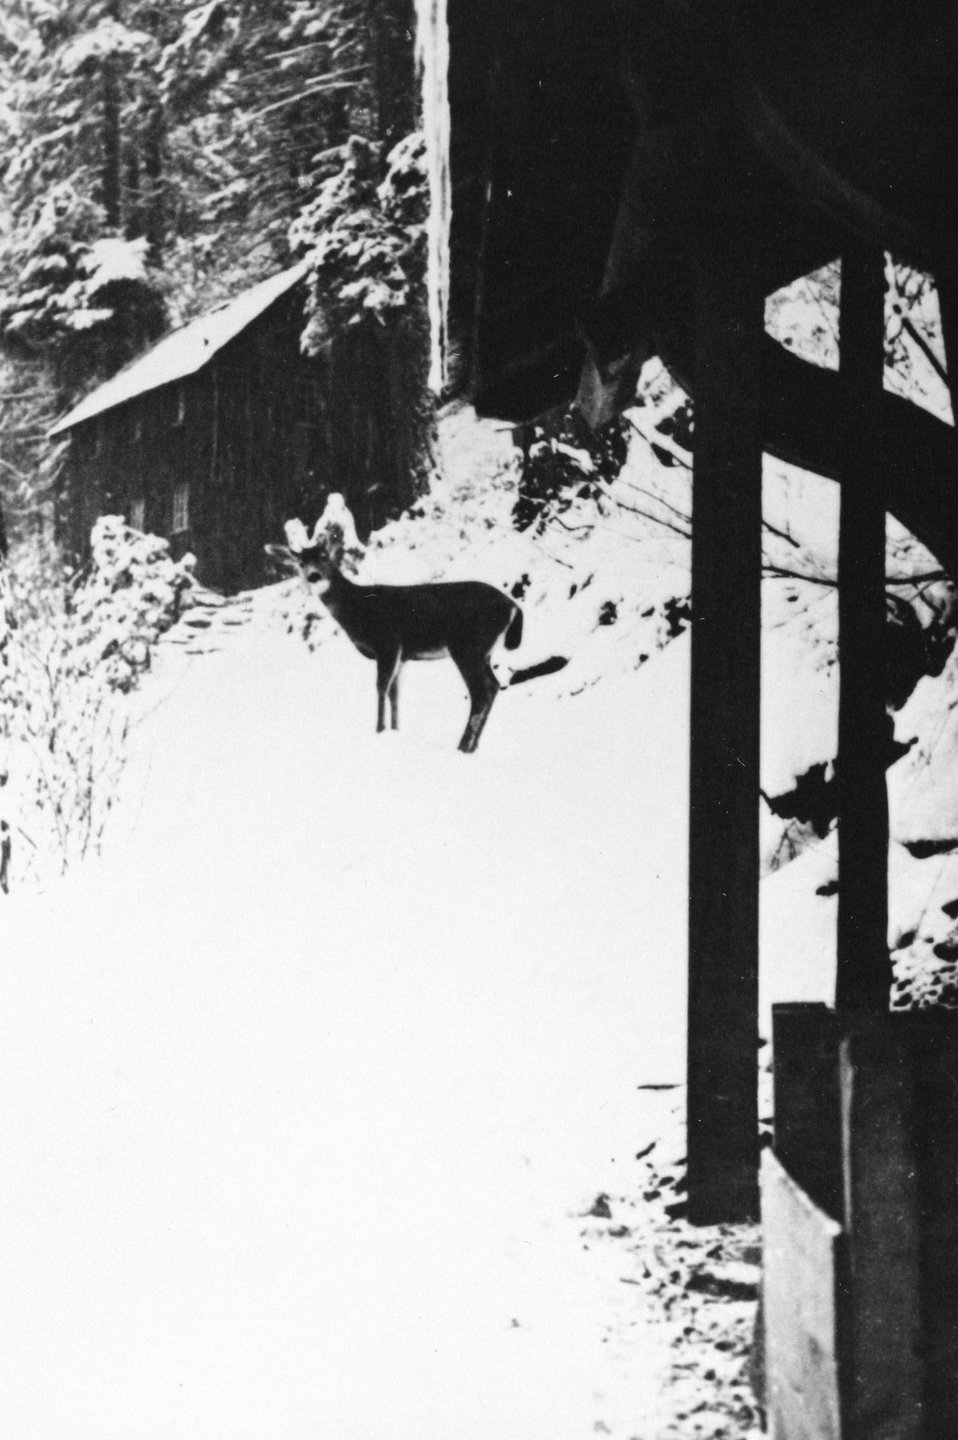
Deer by cabin on Rogue River C. 1915